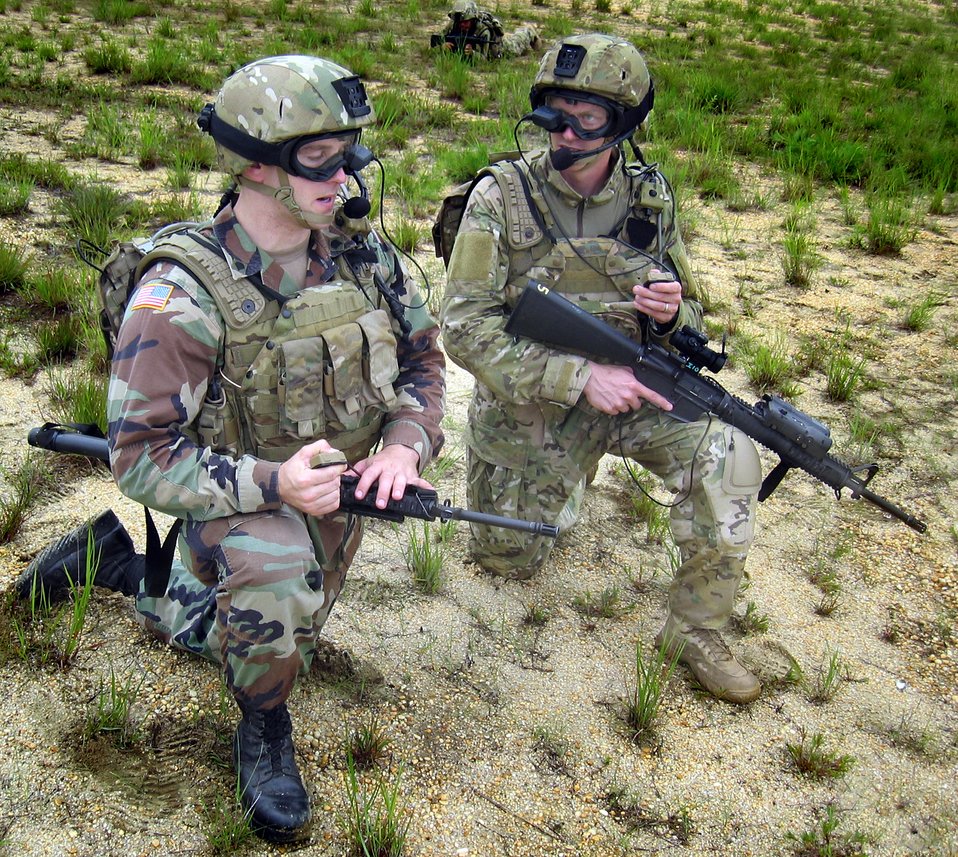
Army praises AFMC units for future battlefield improvements

Army Spc. Chad Tobin (left) and Staff Sgt. Stephan Simmins participate in an On-The-Move training exercise in June at Fort Dix, N. J. The exercise featured Air Force technology applied to support the Army?s Future Force Warrior concept, including a goggle-mounted display, a hand-held mouse that activates push-to-talk personal computer voice command software, a backpack personal computer and power system, and rifle-mounted laser range finder.